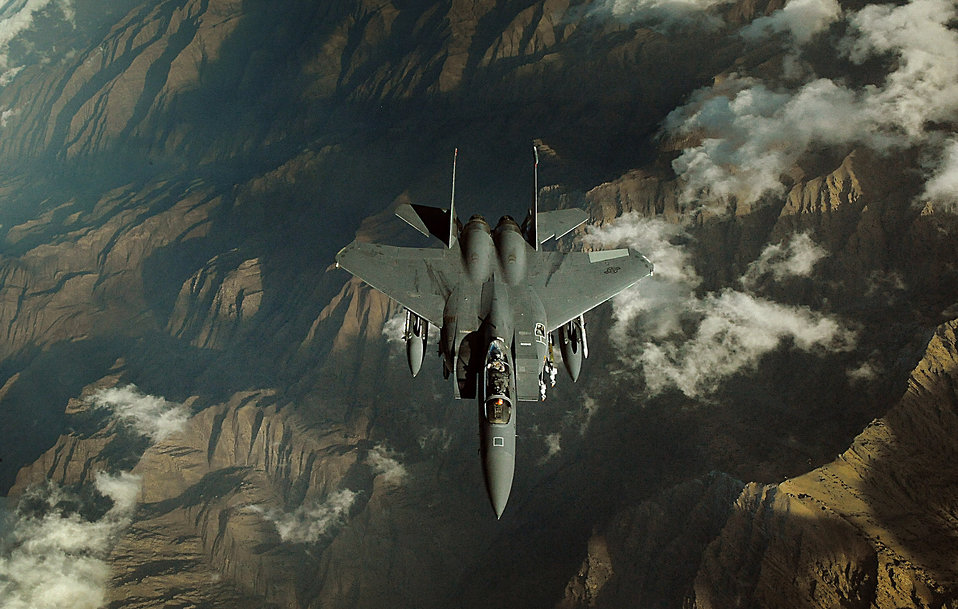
Feb. 25 airpower summary: F-15Es deter enemy forces

An F-15E Strike Eagle flies a combat mission over Afghanistan in support of Operation Enduring Freedom. The F-15E performs shows of force and provides close-air support for International Security Assistance Force ground operations.